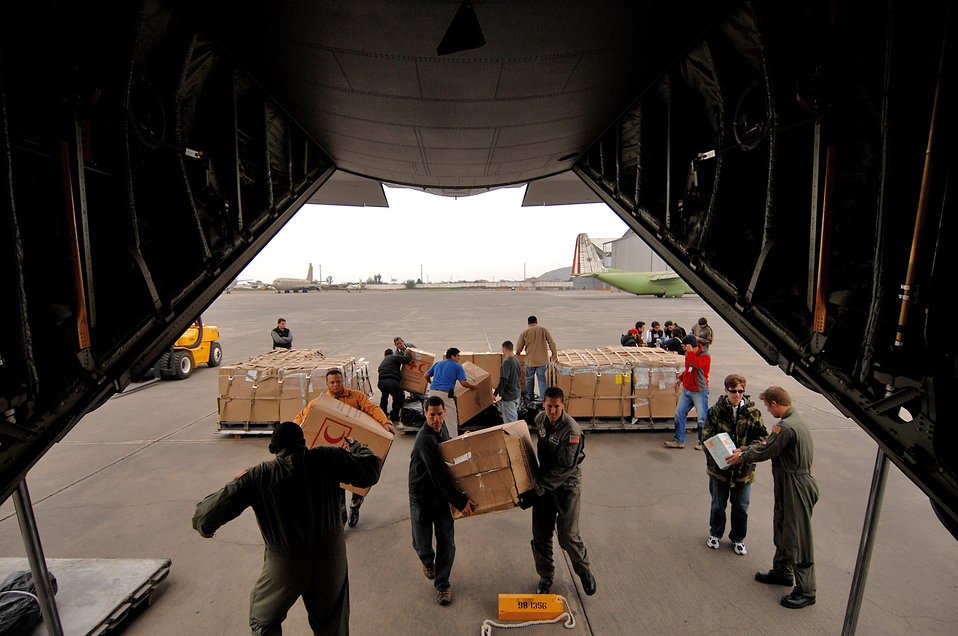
Peruvian support

Crew members of the 135th Airlift Squadron from Baltimore and aid workers load earthquake relief supplies onto a C-130 Hercules Aug. 19 in Lima, Peru. The supplies will be taken to the victims of an 8.0 magnitude earthquake that hit parts of Western Peru Aug. 15, and took the lives of more than 500 people and injured more than 1,500. Around 80,000 Peruvians have been affected by the earthquake, and 80 percent of the homes were destroyed in the city of Pisco.